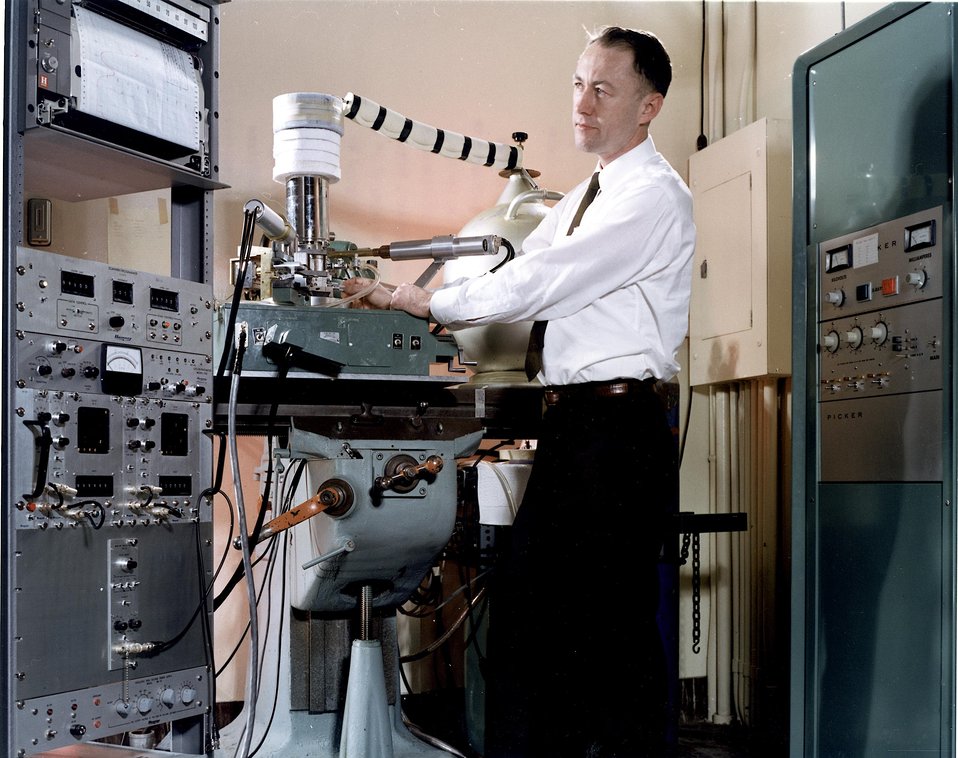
A single crystal of holmium is aligned in the x-ray beam
preparatory to low temperature runs at 77 degrees and 23 degrees Kelvin.